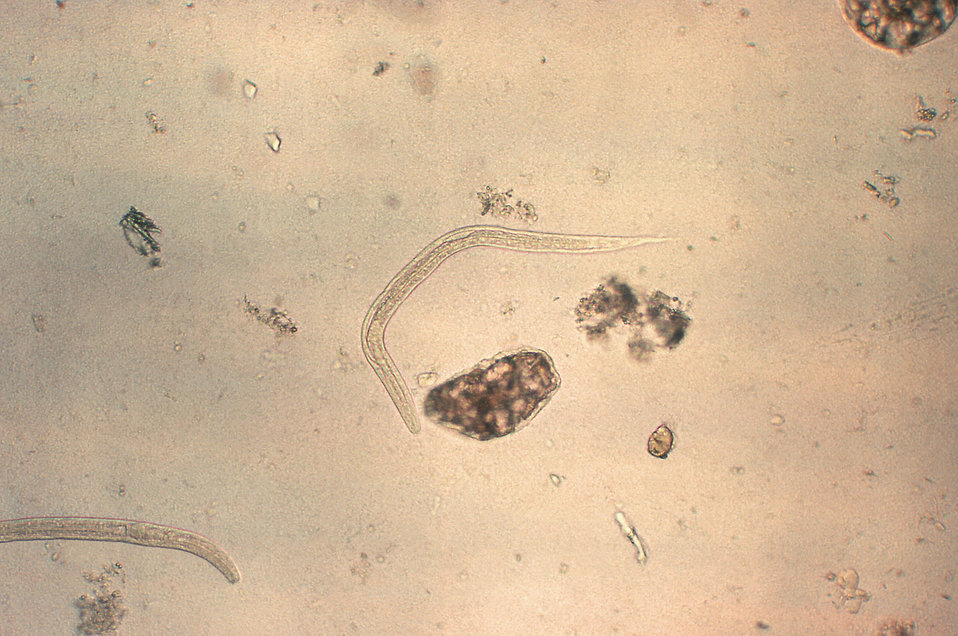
This micrograph depicts a strongyloides nematode in its rhabditiform larval stage, prior to its infective filariform stage.